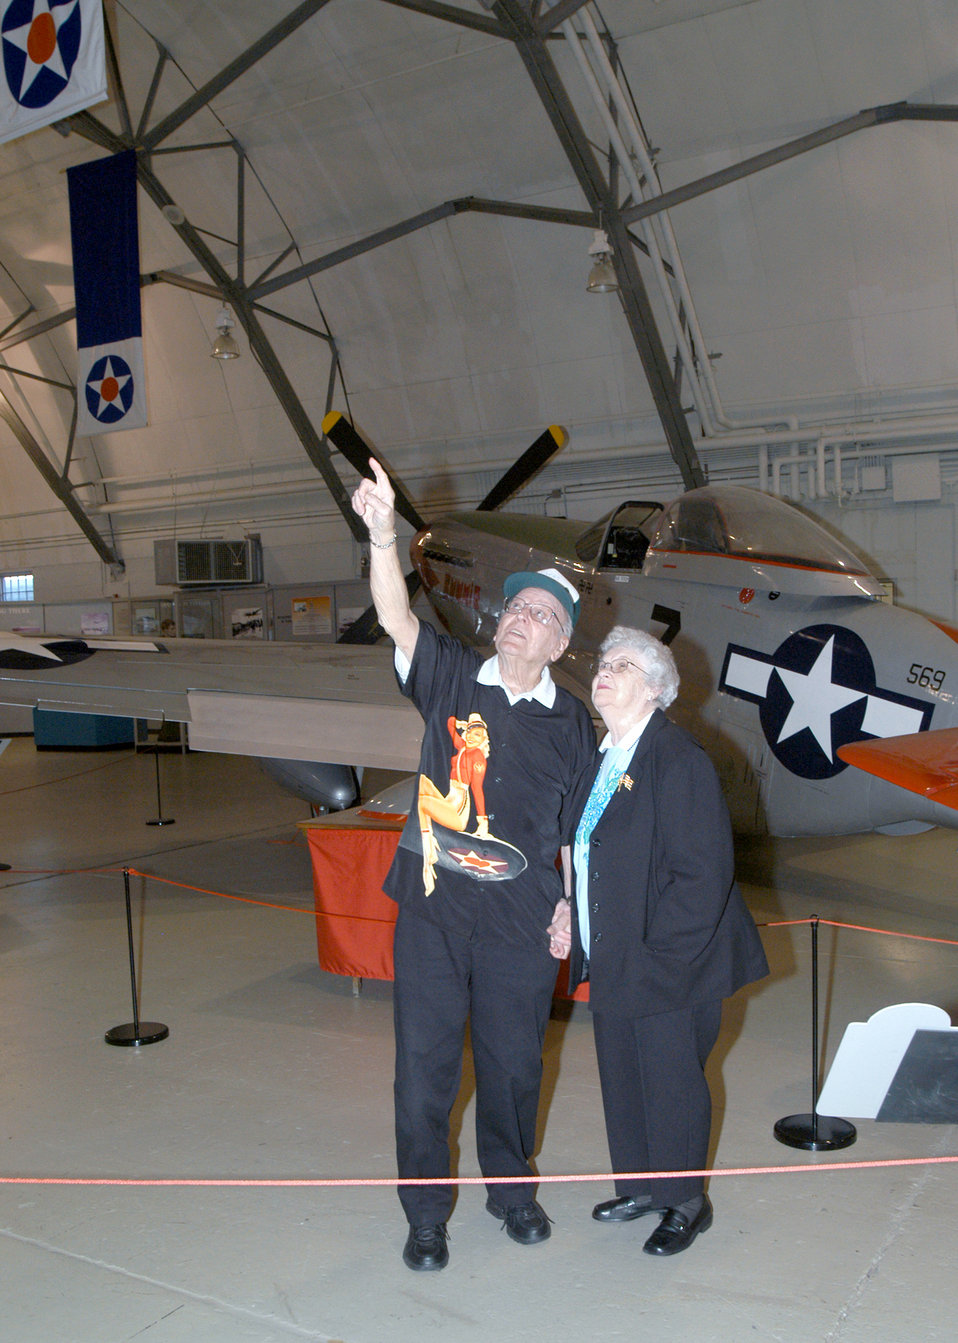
Dover visit

DOVER AIR FORCE BASE, Del. (AFPN) -- Drexel